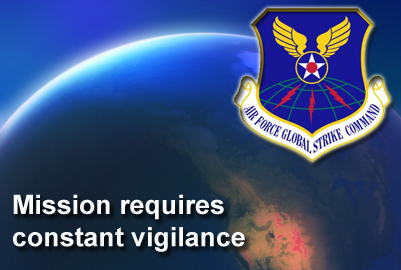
Global Strike Command